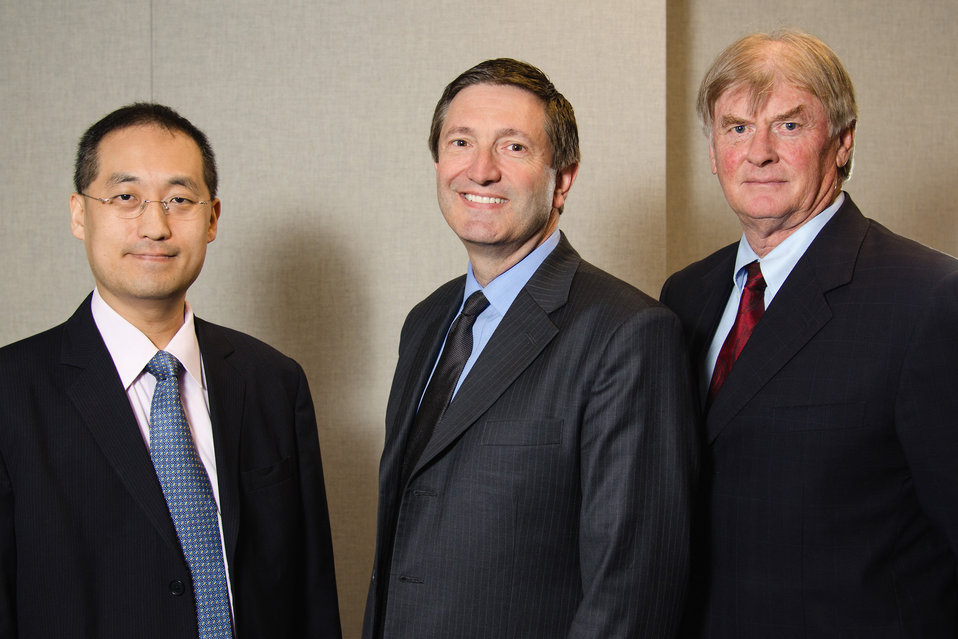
NIST's 2013 Presidential Innovation Fellows

NIST's Presidential Innovation Fellows are (L-R) Sokwoo Rhee and Geoff Mulligan, who will work on cyber physical systems, and John Teeter (far right), who will work on the Green Button Initiative. The three fellows, part of the second round of the PIF program, started their 12-month tours at NIST on June 18, 2013.